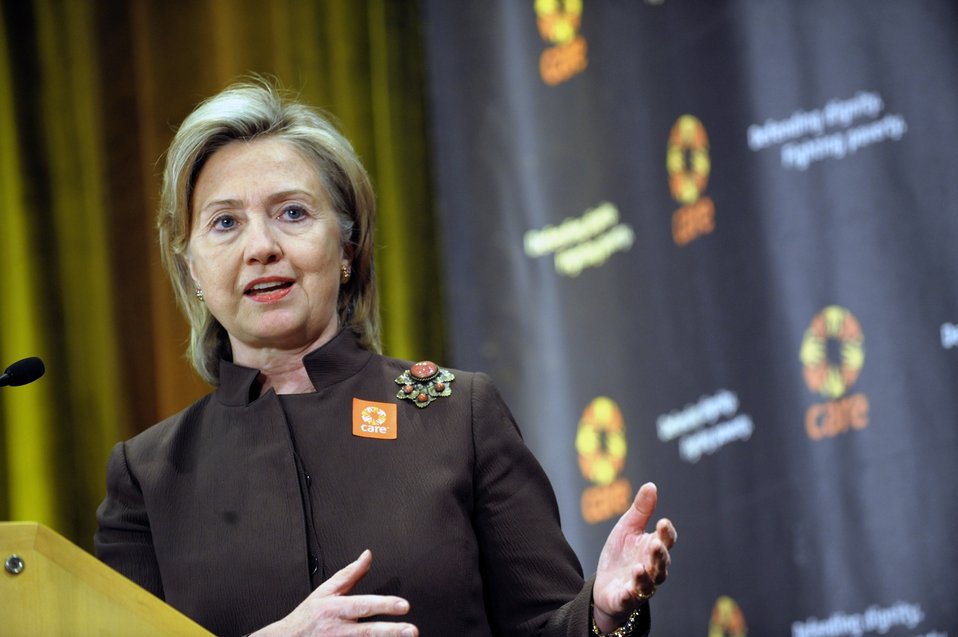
Secretary Clinton Delivers Remarks at 2010 CARE National Conference

U.S. Secretary of State Hillary Rodham Clinton delivers remarks to the 2010 CARE National Conference at the Ronald Reagan Building in Washington, D.C., May 11, 2010.